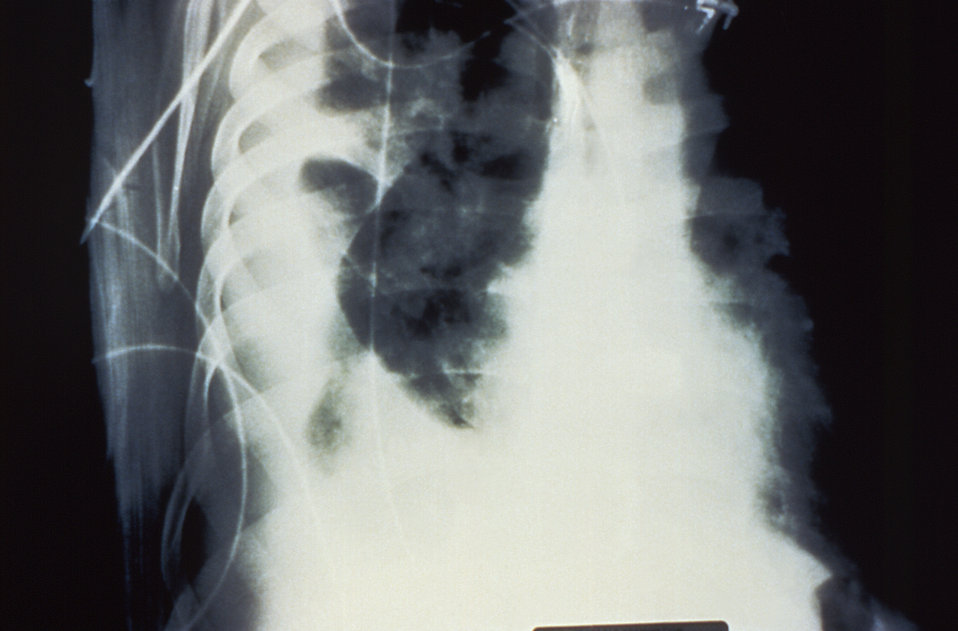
This left lateral decubitus chest x-ray revealed a large pulmonary effusion due to hantavirus pulmonary syndrome, or HPS.